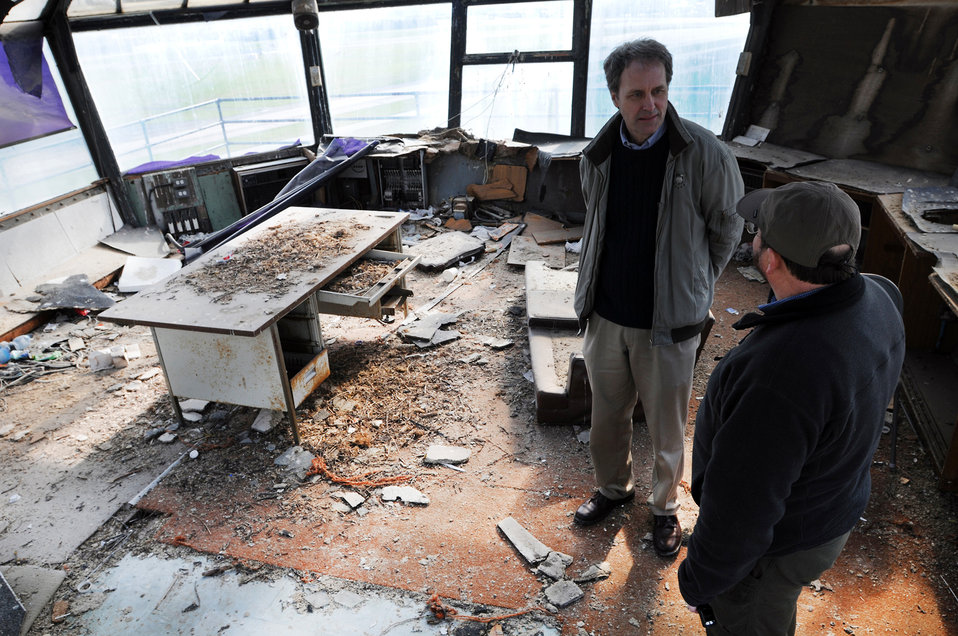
Leakenheath tower falling down

Bill Harris (wearing hat), 48th Fighter Wing Historian discusses some of the intricate details of the old air traffic control tower at Royal Air Force Lakenheath, England, with Joe Koziar, a local fourth-grade school teacher. They were taking a final look Feb. 27 to document the building before it's demolished. The tower has fell into disarray since being abandoned in 1992.